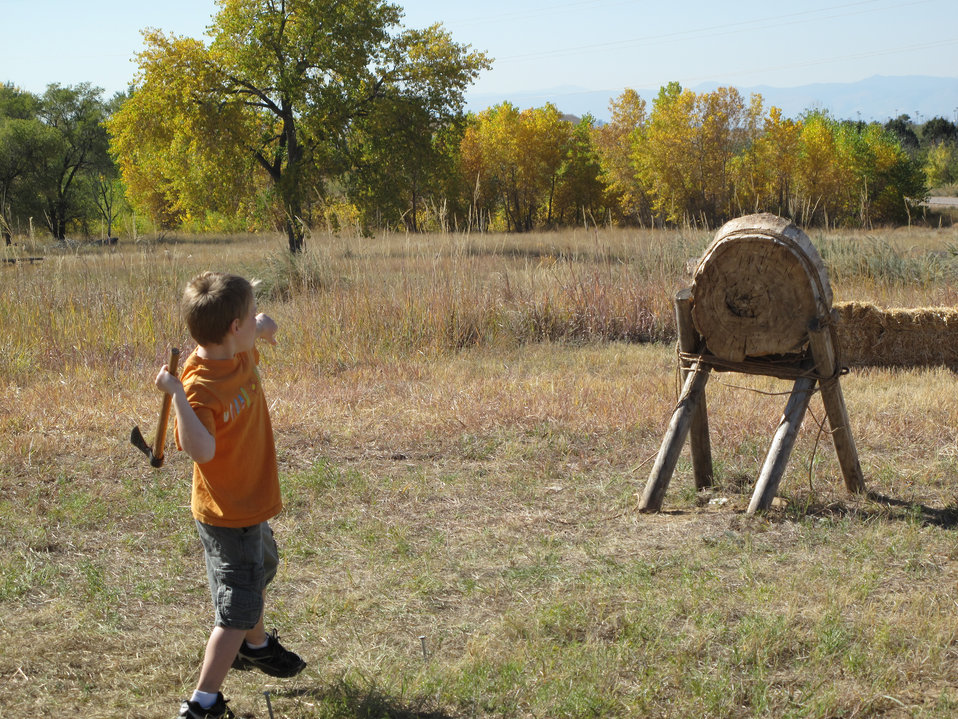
Refuge Round-Up 2010

Boy throws a hatchet at a barrel at the Rocky Mountain Arsenal's Refuge Round-Up in Colorado.